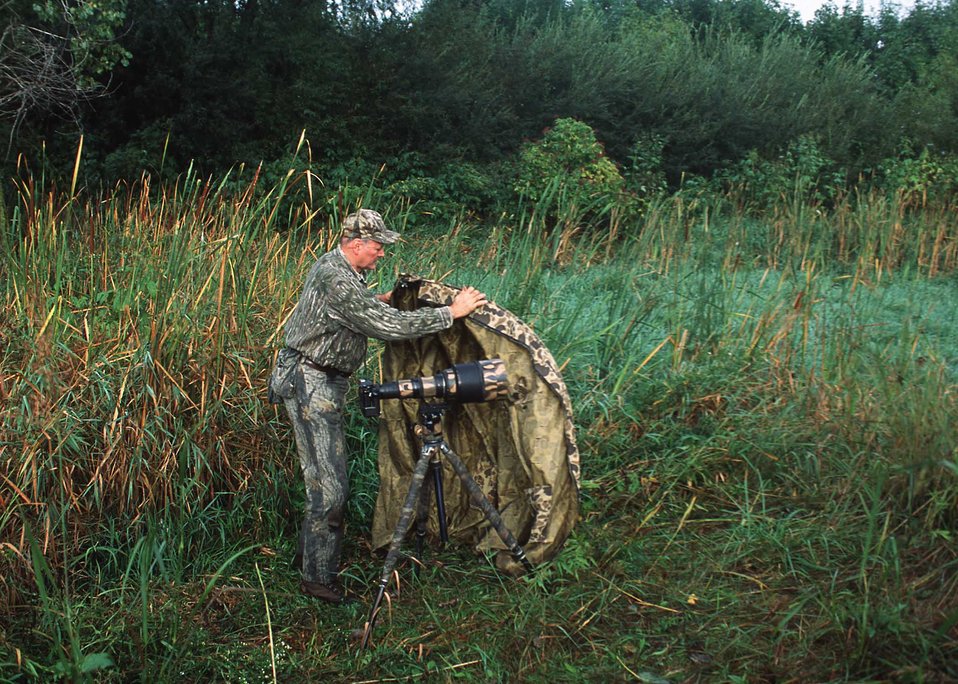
A wetland area and conservation buffer make for excellent wildlife and wildlife photography along Bear Creek in central Iowa.